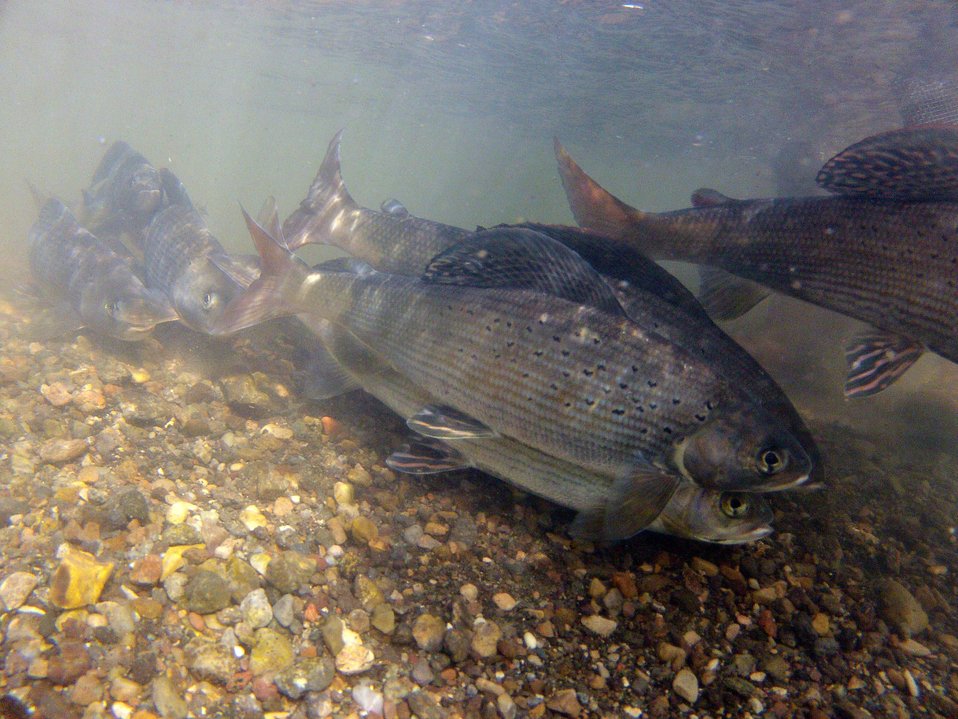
Time to run.

Unlike mammals, most fish reproduce by fertilizing eggs outside of their bodies. This act is commonly referred to as spawning. When fish migrate for spawning purposes, biologist refer to this as a 'spawning run'.

When spring finally arrives in Montana, Arctic Grayling initiate just such a 'run'. This consistent, mostly predictable, behavior affords Montana Fish and Wildlife Conservation Office personnel an opportunity to monitor and assess Arctic Grayling trends in collaboration with Red Rock Lakes National Wildlife Refuge.